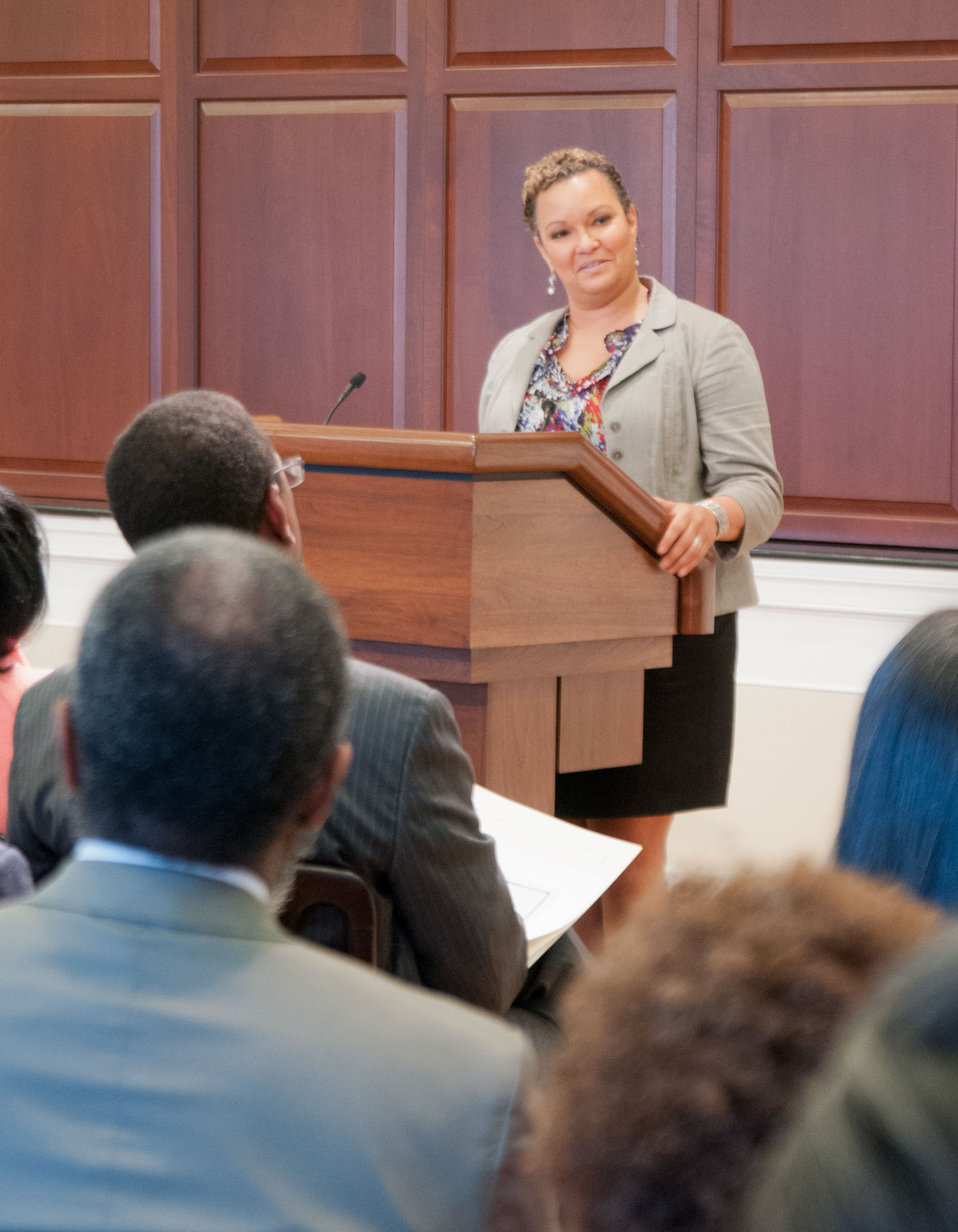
Administrator of the Environmental Protection Agency (EPA) Lisa Jackson speaks during the 2012 Historically Black Colleges and Universities 1890 Land-Grant University Memorandum of Understanding Signing Ceremony on Friday, June 29, 2012, in the White House’s Eisenhower Executive Office Building, Washington, DC. It has been150 years since the first Morrill Act of 1862, which was signed by President Abraham Lincoln. The action established land-grant universities in every state and territory. The second Morrill Act of 1890 provided funding to designate separate institutions of higher learning for blacks in those states that did not open the doors of their universities to black students.